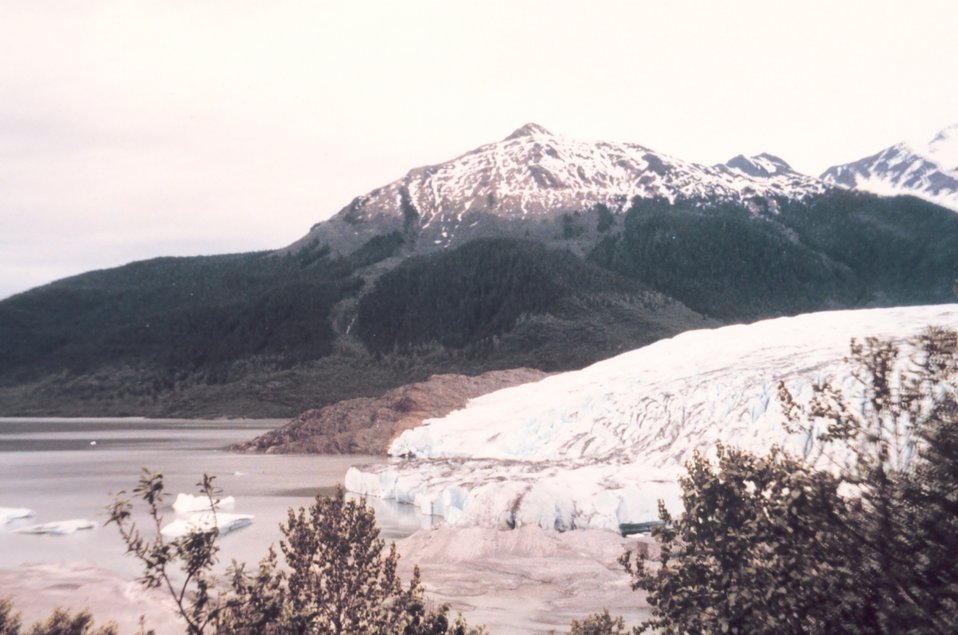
Mendenhall Glacier